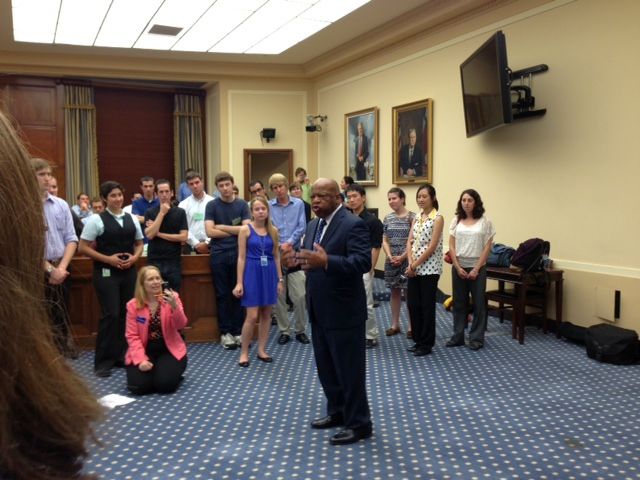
Congressman John Lewis GA-5, (center) speaks to students participating in NIST's Summer Undergraduate Research Fellowship (SURF) program in the House Science, Space, and Technology Committee hearing room. The event afforded an opportunity for Members of Congress to meet students from their district who are in the program. Over 130 students and teachers attended the event as did 21 Members of Congress or their representatives.